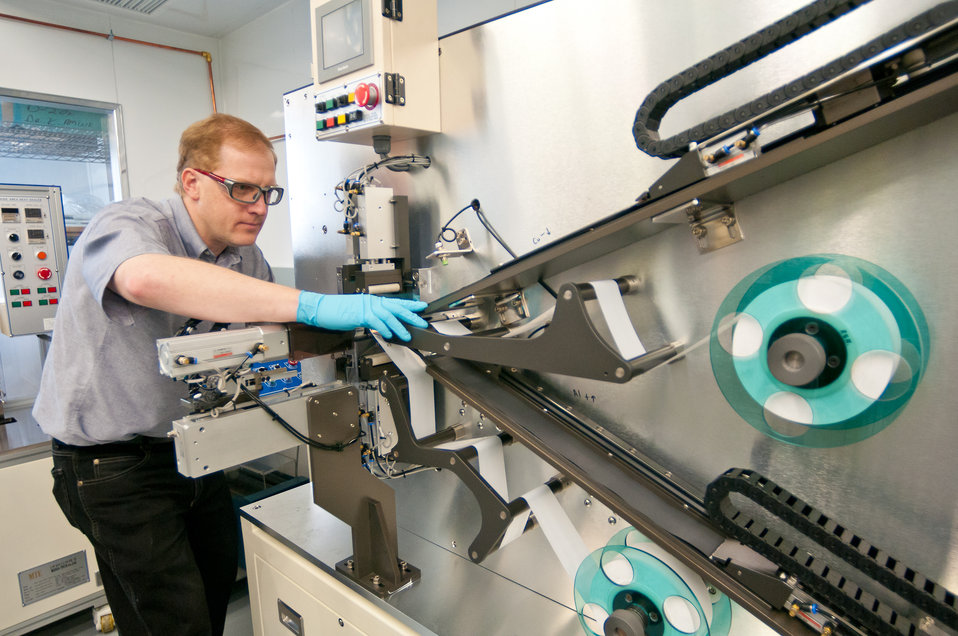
Argonne National Laboratory chemical engineering lines up positive and negative electrodes on a machine called a winder.

The two electrodes will be wound together with a separator to create a structure called a jellyroll, which is then used to make a prototype lithium-ion battery.Argonne is one of several research institutions that form an integral part of the Joint Center for Energy Storage Research, a public-private partnership that aims to overcome critical scientific and technical barriers and create new breakthrough energy storage technologies.